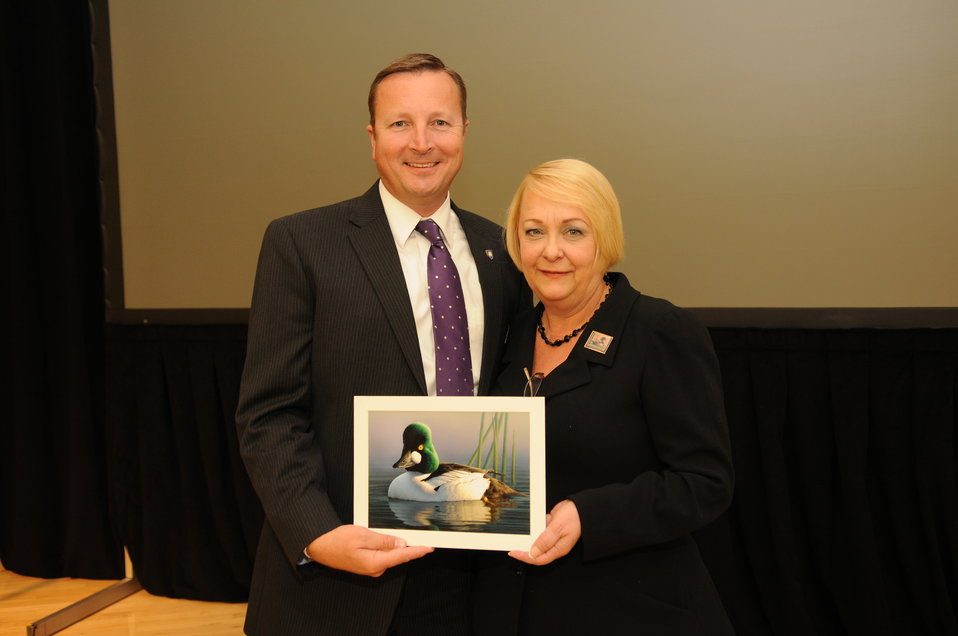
Everyone Loves a Winner

The U.S. Fish & Wildlife Service sponsored the 2012 Federal Duck Stamp Art Contest September 28 and 29 in Ogden, Utah, at Weber State University. A panel of five judges was responsible for choosing the art work used to design the 2013-2014 Migratory Bird Hunting and Conservation Stamp.